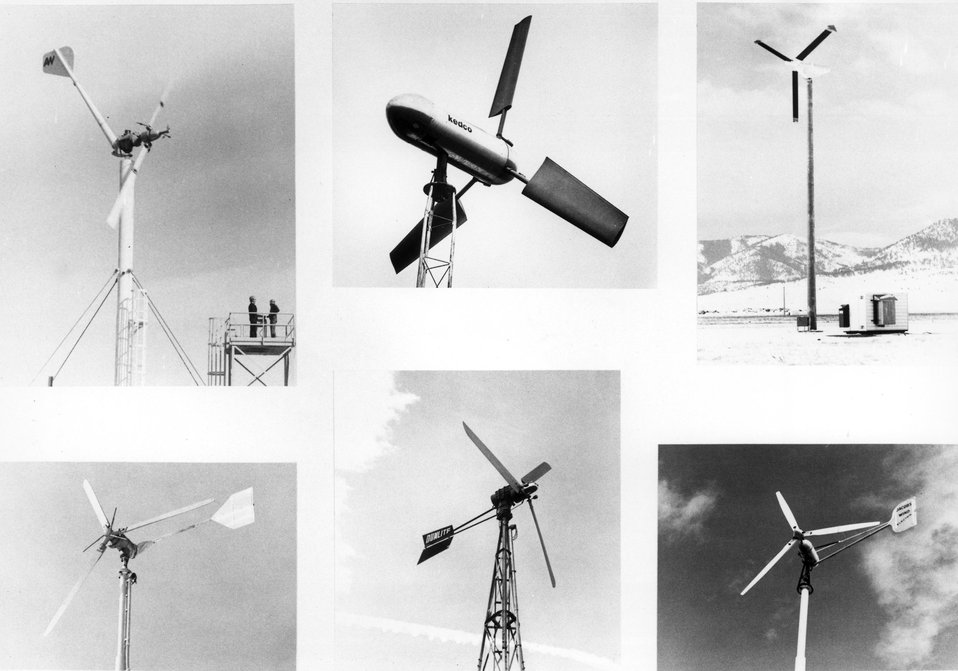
No caption. c. 1977